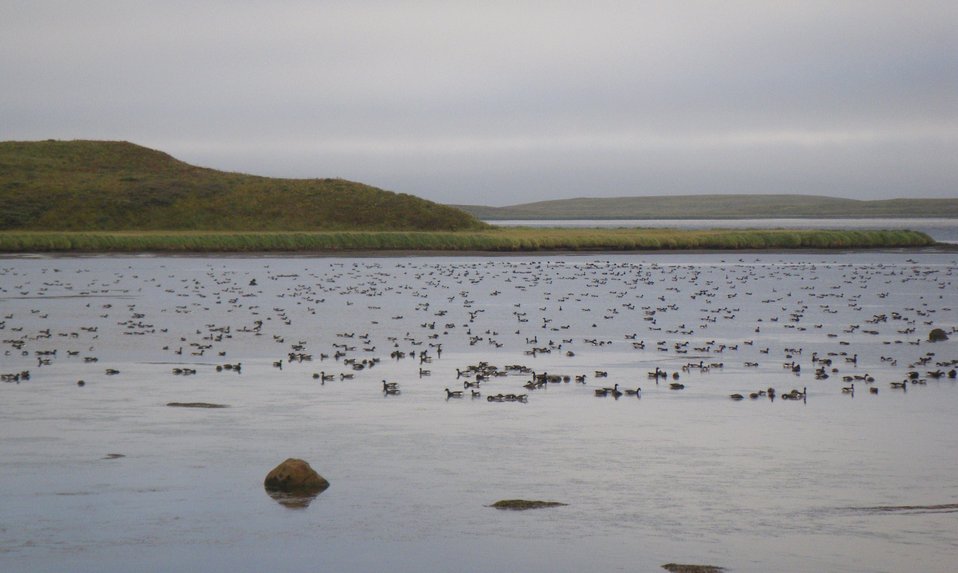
Brant, Izembek Lagoon, Izembek National Wildlife Refuge